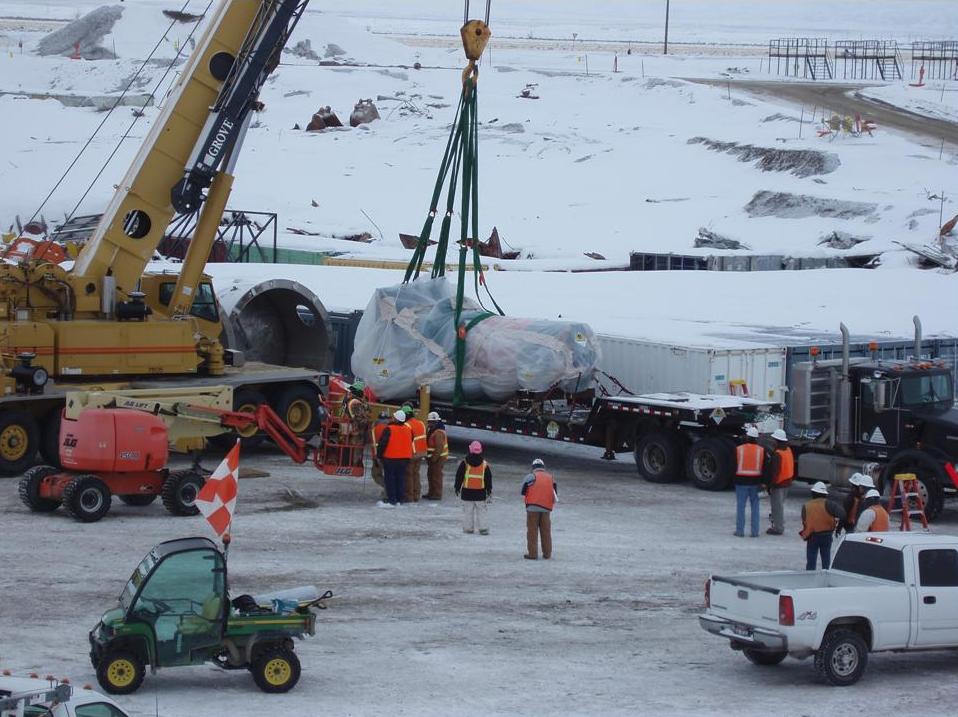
Recovery Act Crews Bury Last of Historic Reactors at Idaho Site

The Materials Test Reactor reaches its final destination at a disposal facility at the Idaho site.